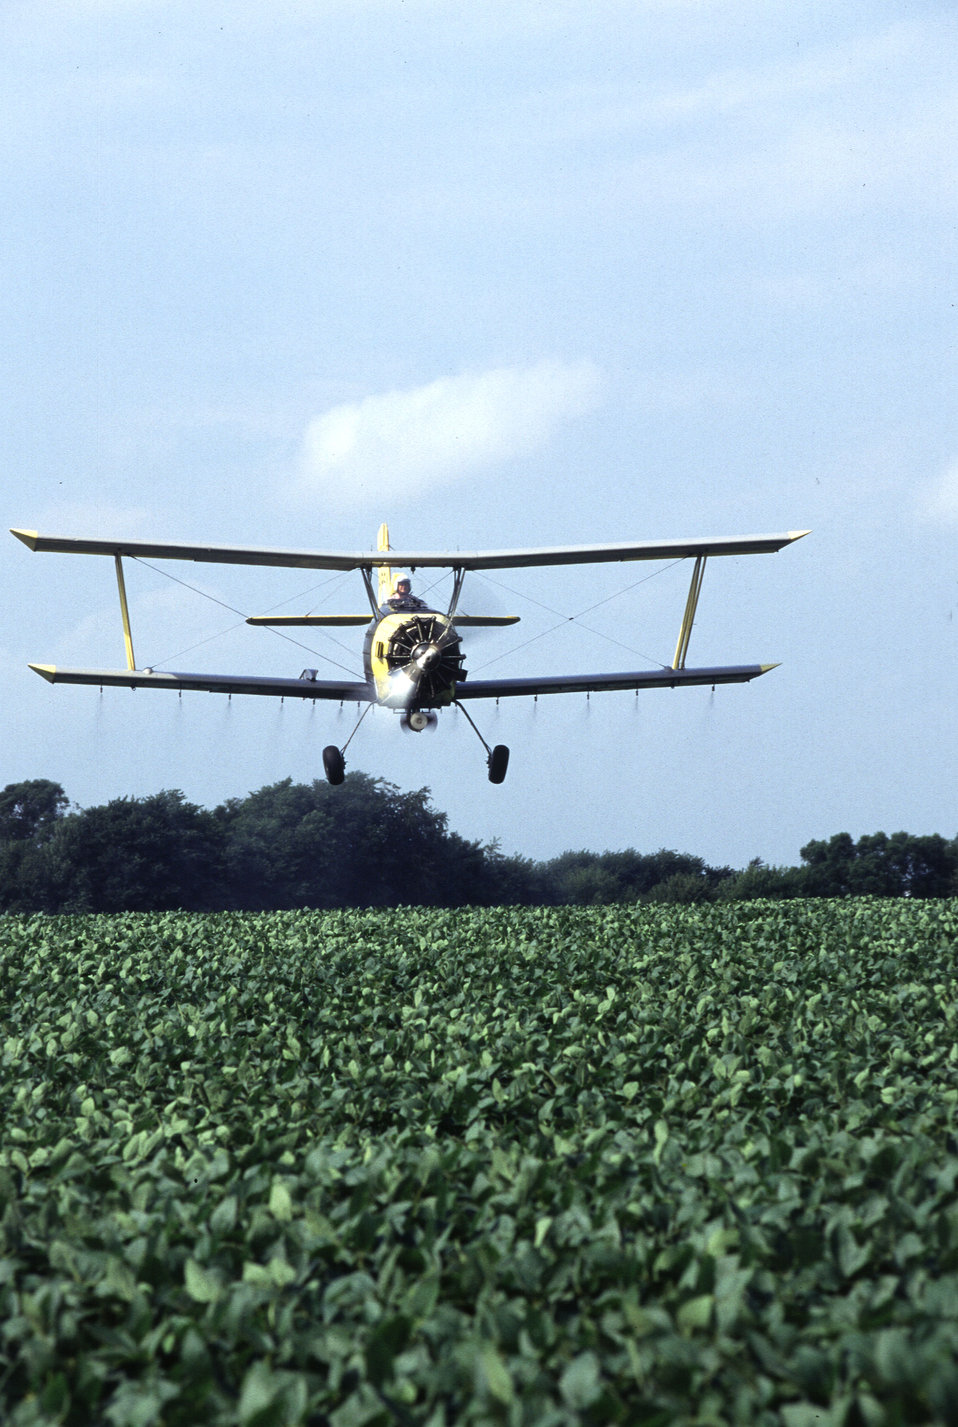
Grower Joe Zumwalt applies a low-insecticide bait that is targeted against western corn rootworms feeding on and laying eggs in these soybeans near Sheldon, IL.